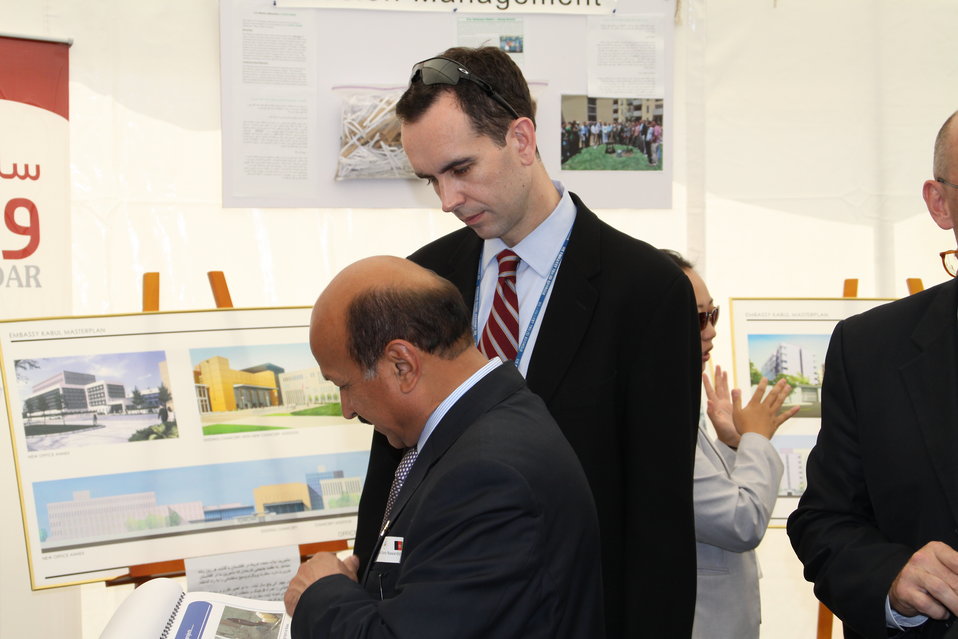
Kabul Official July 4th Celebration